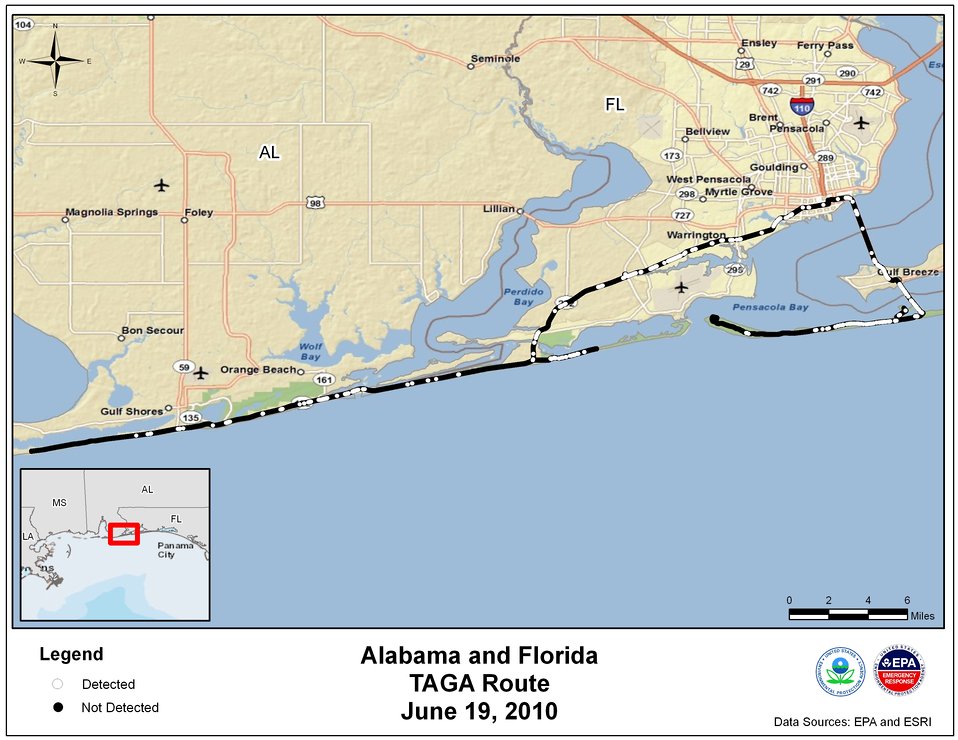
EPA TAGA Air Monitoring Locations June 19, 2010